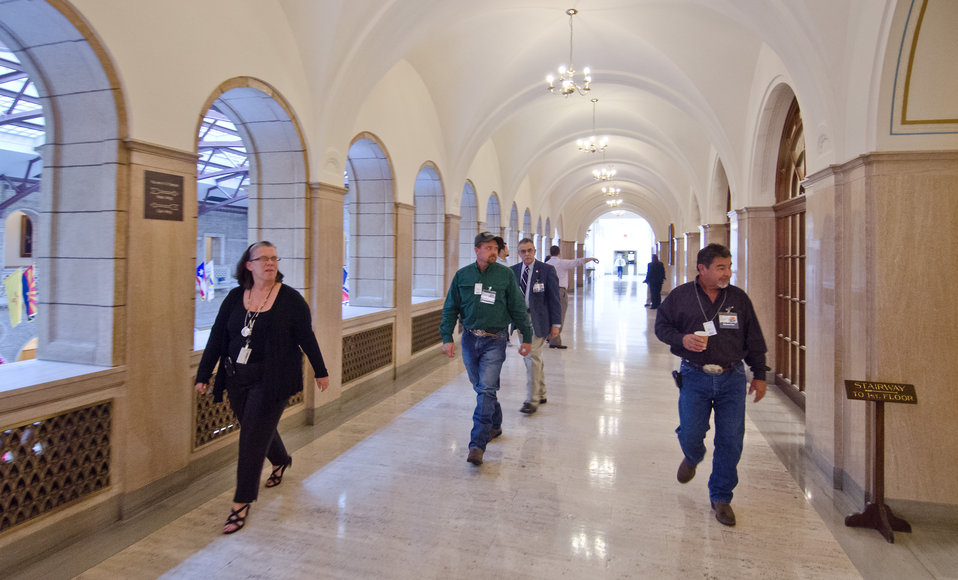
U.S. Department of Agriculture's (USDA) Senior Advisor to the Secretary for Tribal Relations Janie Simms Hipp (left) of the Chickasaw Nation, leads a tour for some of the U.S. Department of Agriculture's (USDA) Council for Native American Farming and Ranching (CNAFR) representatives through Secretary Tom Vilsack's office center on Monday, Aug. 13, 2012 at the USDA headquarters Whitten Building, in Washington, D.C. CNAFR was created to advise the Secretary on ways to eliminate barriers to participation for Native American Farmers and Ranchers in USDA programs. The Council was established as part of the Keepseagle settlement, and is conducted under the oversight of USDA's Office of Tribal Relations, which is part of the Office of the Secretary of Agriculture. The Director of Tribal Relations Joanna Mounce Stancil serves as Designated Federal Official (DFO) for the Council.